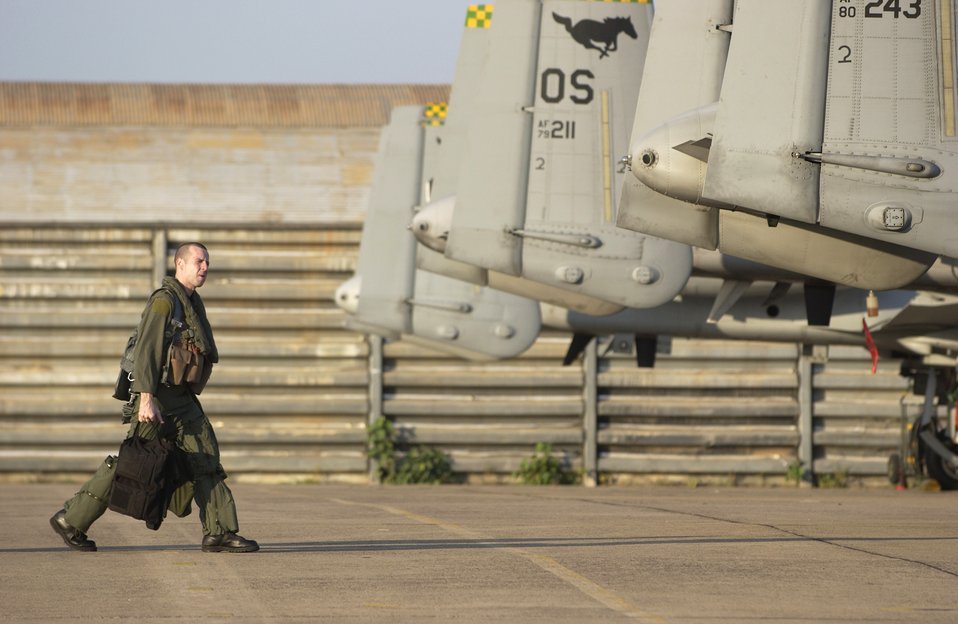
Cope Tiger '06

KORAT ROYAL AIR FORCE BASE, Thailand (AFPN) -- Maj. Chris Price walks to his A-10 Thunderbolt II before an exercise Cope Tiger '06 mission here Feb. 8. Major Price is an A-10 pilot with the 25th Fighter Squadron at Osan Air Base, South Korea.